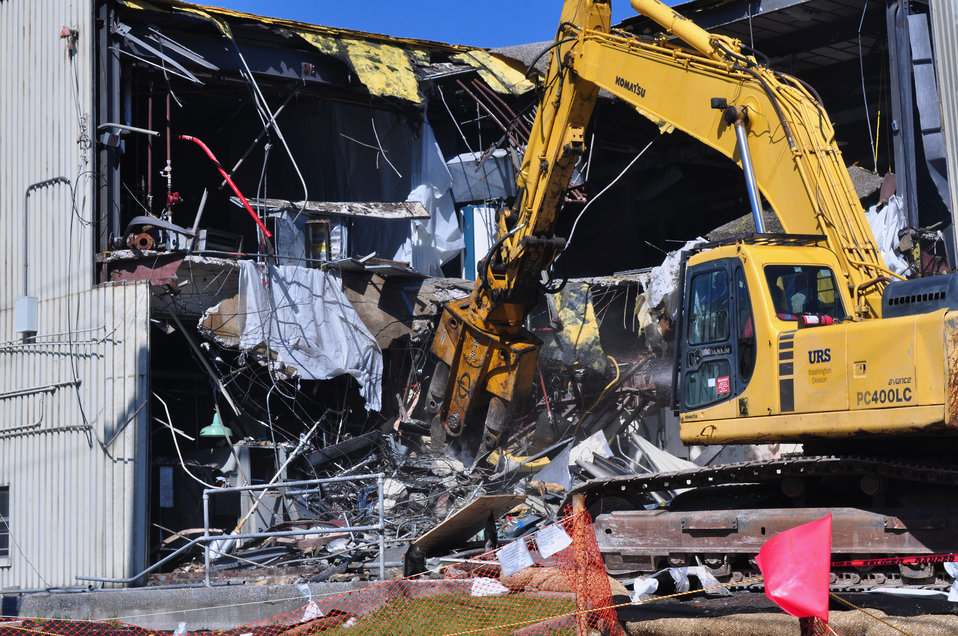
DandD work on Bld. 3508 at Oak Ridge National Lab.

12-077-25 DOE photo by Lynn Freeny

Oak Ridge Tennessee 4-13-2012